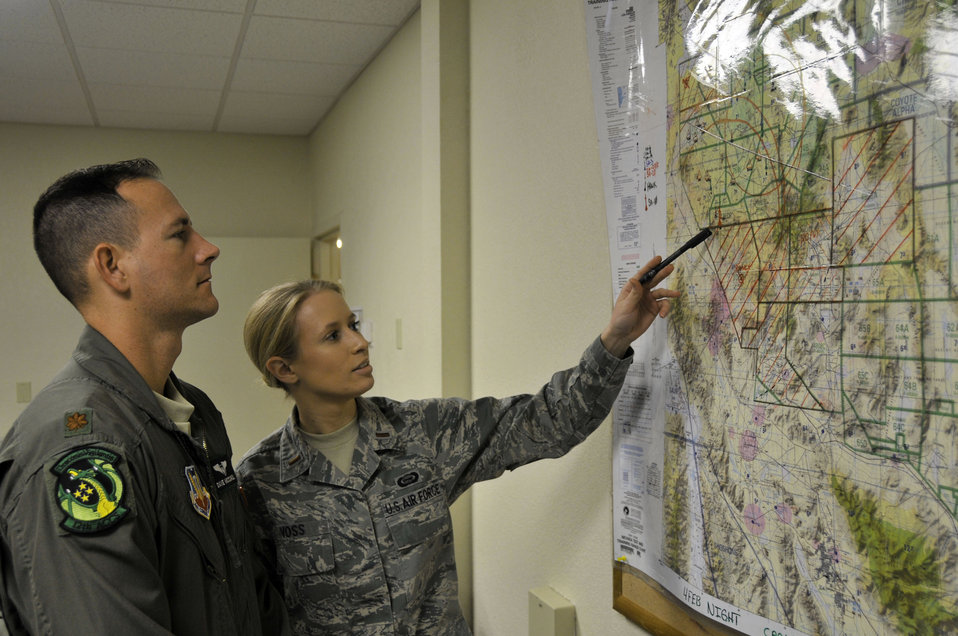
Airmen provide intelligence needs for Red Flag

2nd Lt. Loren Voss (right) assists Maj. Dave McCaskill with his mission planning prior to a mission Feb. 3, 2010, at Nellis Air Force Base Nev. Lieutentant Voss is the Core Intelligence Cell night officer in charge deployed to Red Flag 10-2 from Royal Air Force Lakenheath, England. The CIC prepares aircrews for any threats they may encounter during their combat training. Major McCaskill is an E-8C Joint STARS pilot deployed from Robbins Air Force Base, Ga.